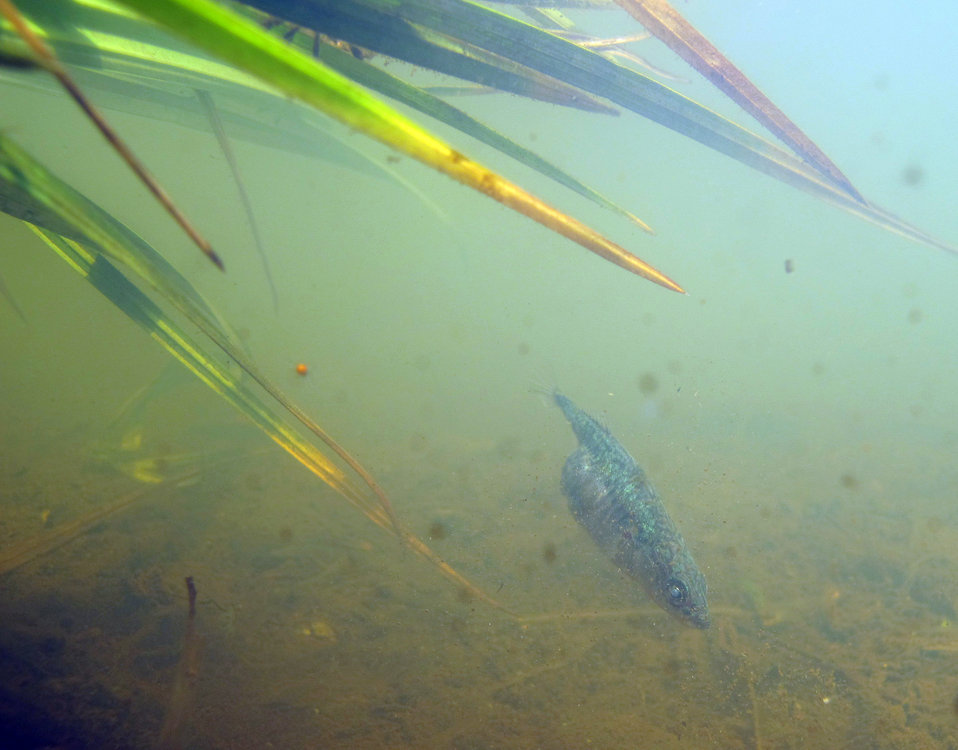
3 spine stickleback female

Feeding in Beluga Lake in Homer, AK.